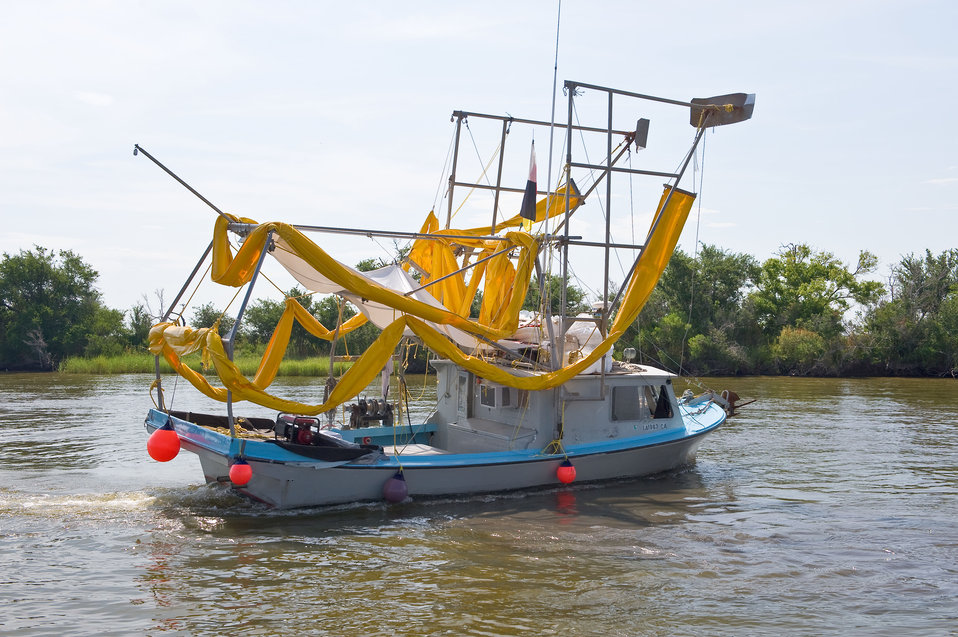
August 6, Ready for a new day's work

A shrimp boat, now outfitted with oil boom, heads out from Leeville, La.